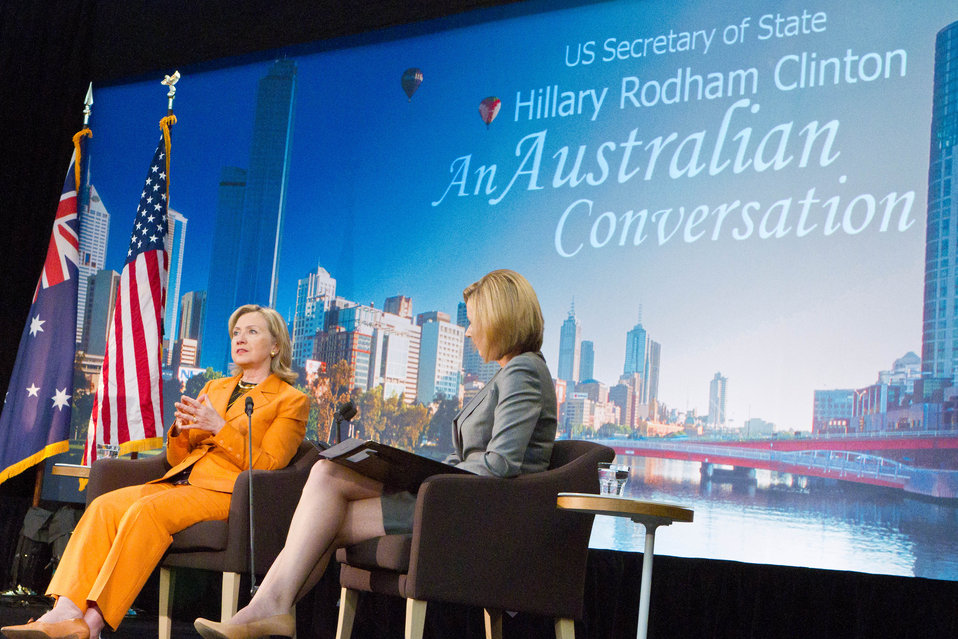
Secrerary Clinton Responds to Questions

U.S. Secretary of State Hillary Rodham Clinton responds to questions during a Townterview with the Australian Broadcasting Company in Melbourne, Australia, on November 7, 2010.